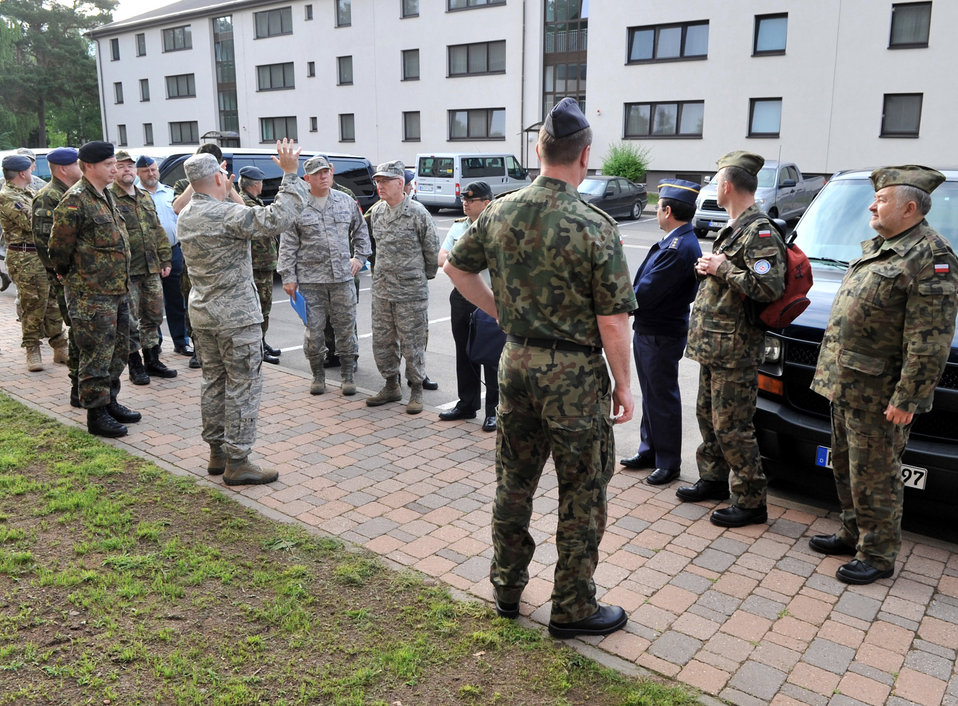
NATO AAFCCC 2011

Chaplain (Capt.) Christopher Conklin briefs Chaplain (Maj. Gen.) Cecil R. Richardson and other NATO chaplains June 16, 2011, during the NATO Allied Air Force Chaplains Consultative Committee Conference at Ramstein Air Base, Germany. Chaplain Conklin is the 86th Airlift Wing Deployment Transition Center chaplain. Chaplain Richardson is the U.S. Air Force chief of chaplains.